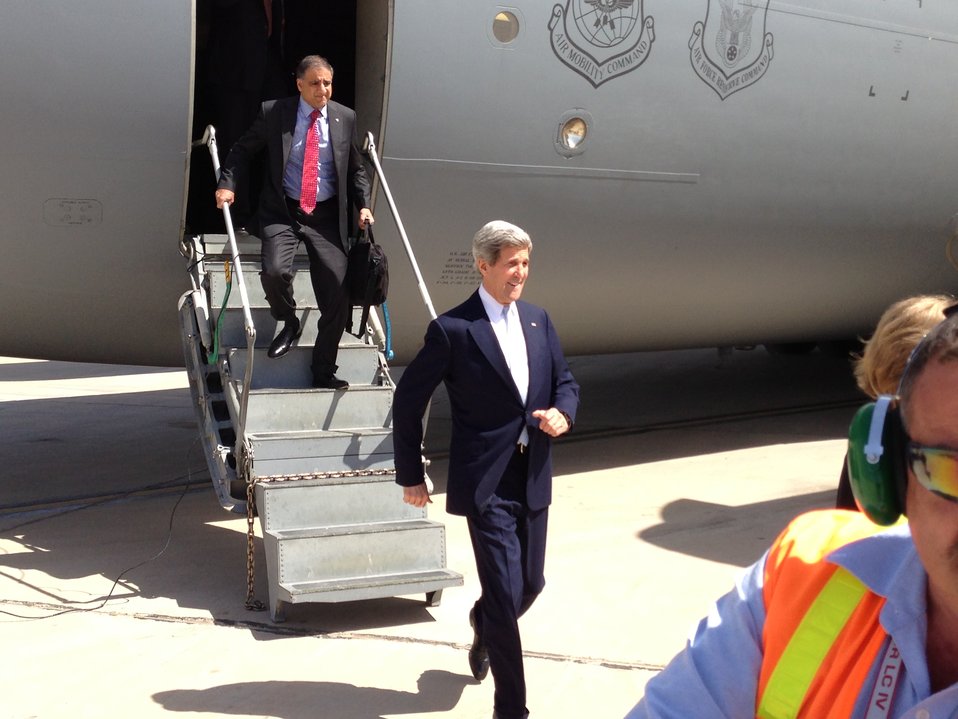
Secretary Kerry Arrives in Baghdad

U.S. Secretary of State John Kerry steps off military transport in Baghdad, Iraq on March 24, 2013.